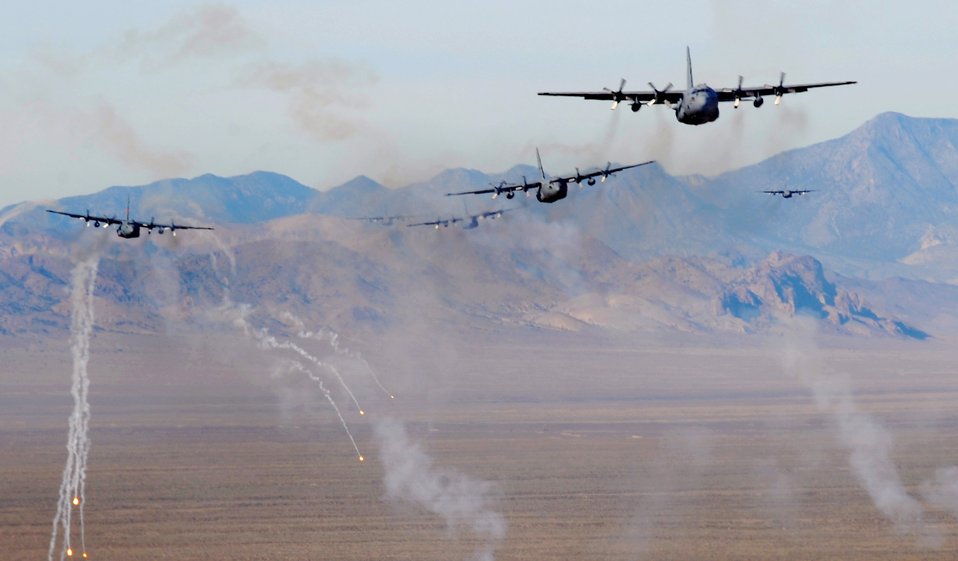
Take this flare

A formation of C-130 Hercules aircraft fire off chaff and flare countermeasures over the Nevada Test and Training Range Nov. 17, 2010 during a mobility air forces exercise. More than 40 C-17 Globemaster IIIs and C-130s assembled in aerial formations over the range to conduct air and ground operations.